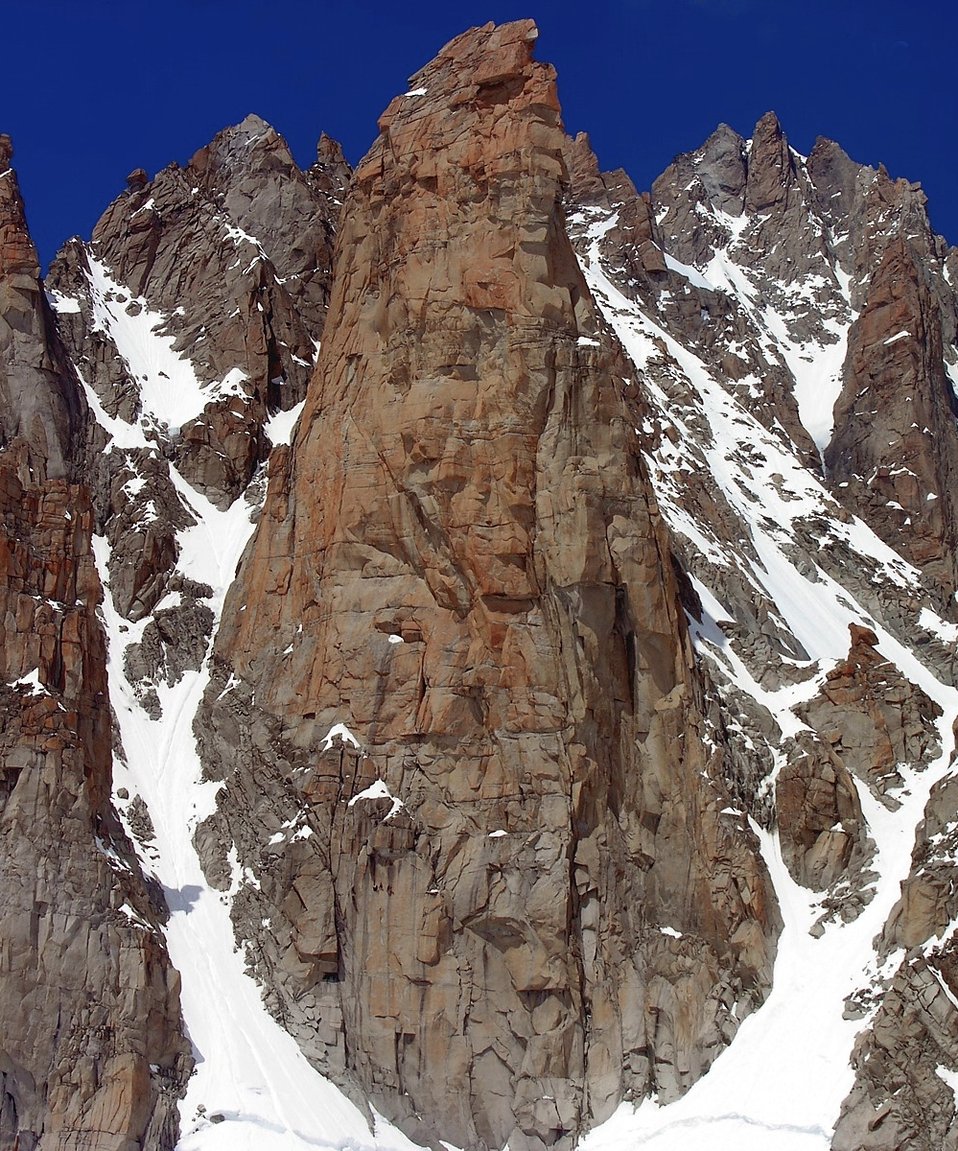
06255 Monti il Grand Capucin Courmayeur 13-06-2006.jpg - Alpi Graie - Francia